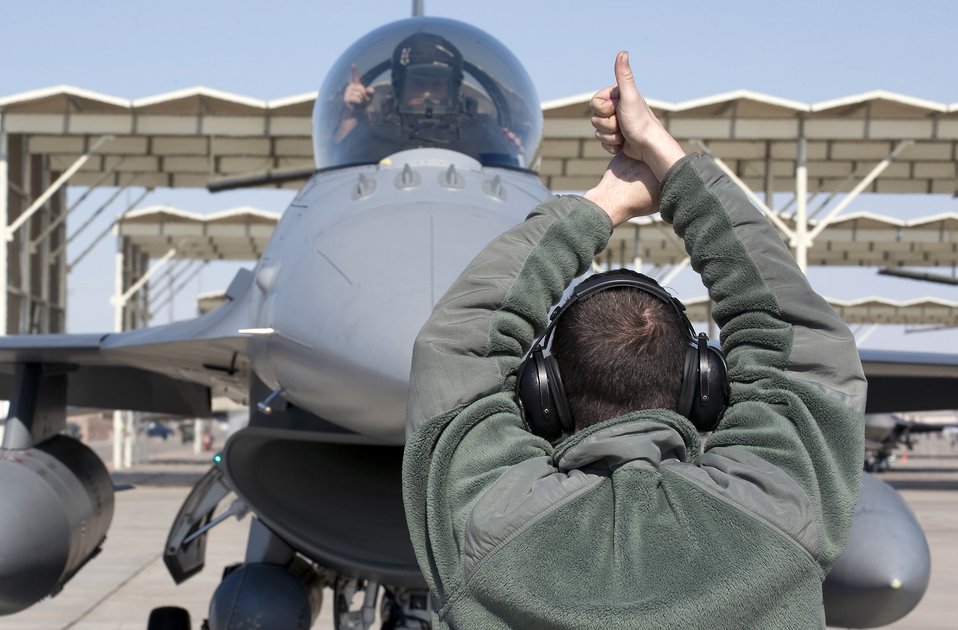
Ready to roll

Senior Airman Jason Carey gives a